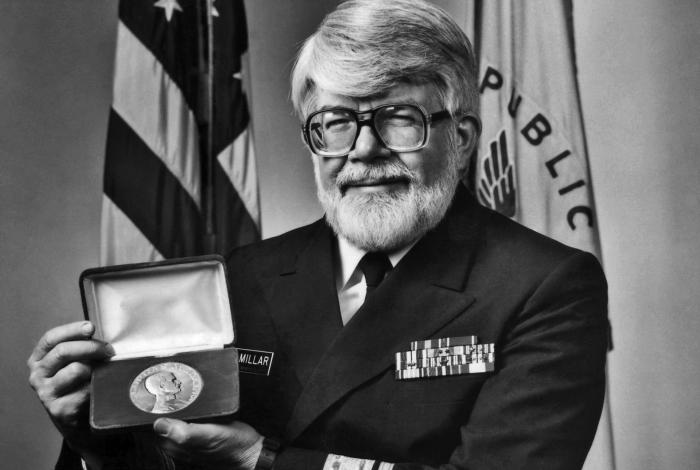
This was a photographic portrait of J. Donald Millar, M.D., M.P.H., receiving the Gorgas Medal for his achievements in preventive medicine.